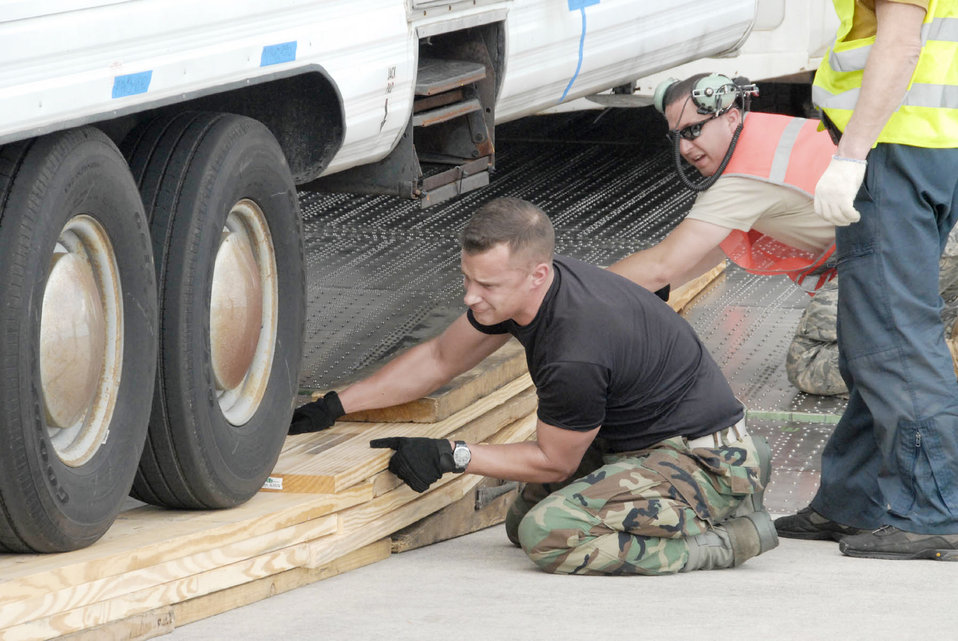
Haiti Relief

A Federal Aviation Administration mobile air traffic control tower is loaded onto a Russian-owned Antonov An-124 aircraft bound for the Port-au-Prince Airport in Haiti Jan. 21, 2010. The tower will serve as the main tower the airport. Tech Sgt. Jake Teufel and Staff Sgt. Ryan Snyder assist members of the Russian crew with approach shoring. Sergeants Teufel and Snyder are assigned to the 914th Maintenance Squadron.